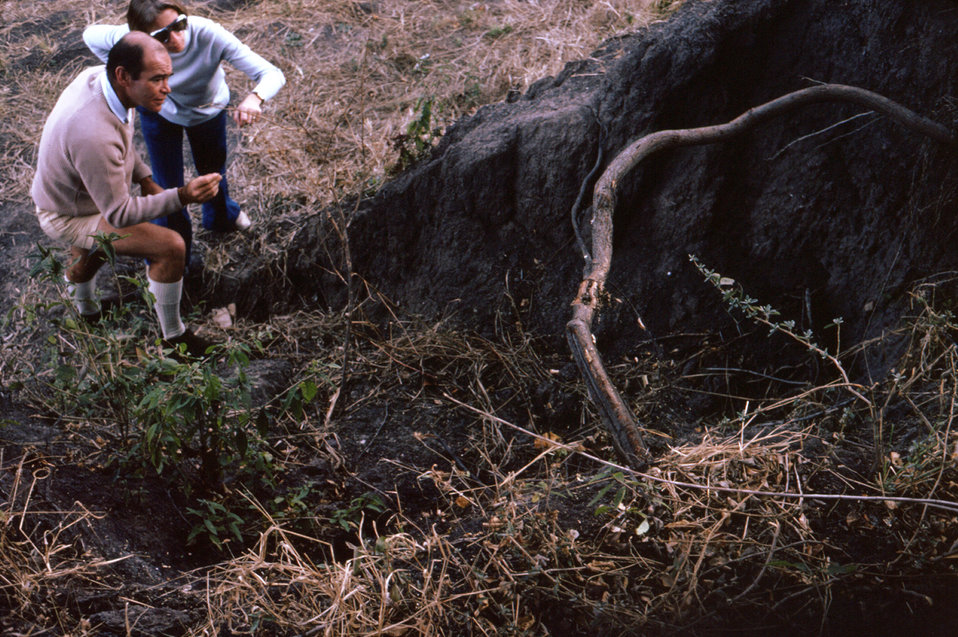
This photograph of Dr. M. Isaacson and a sanitarian, was taken during a Rhodesian, now Zimbabwean Marburg epidemiologic investigation that occurred after the 1975 South African Marburg outbreak.